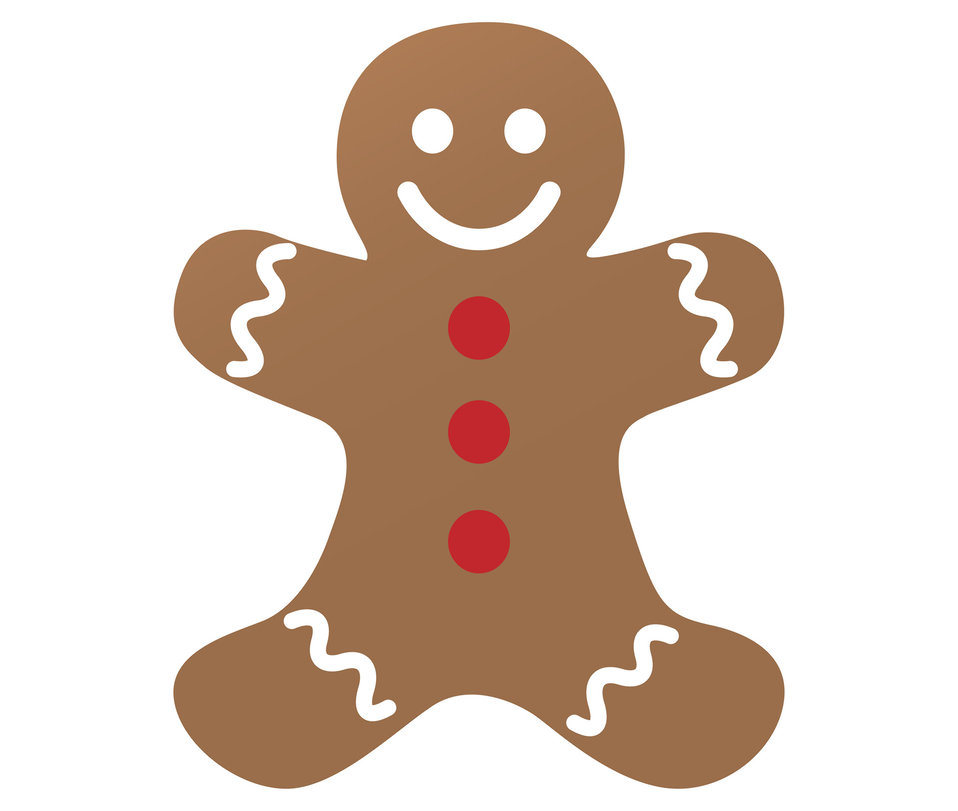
Gingerbread man clipart

Cute gingerbread man clipart for scrapbooking.